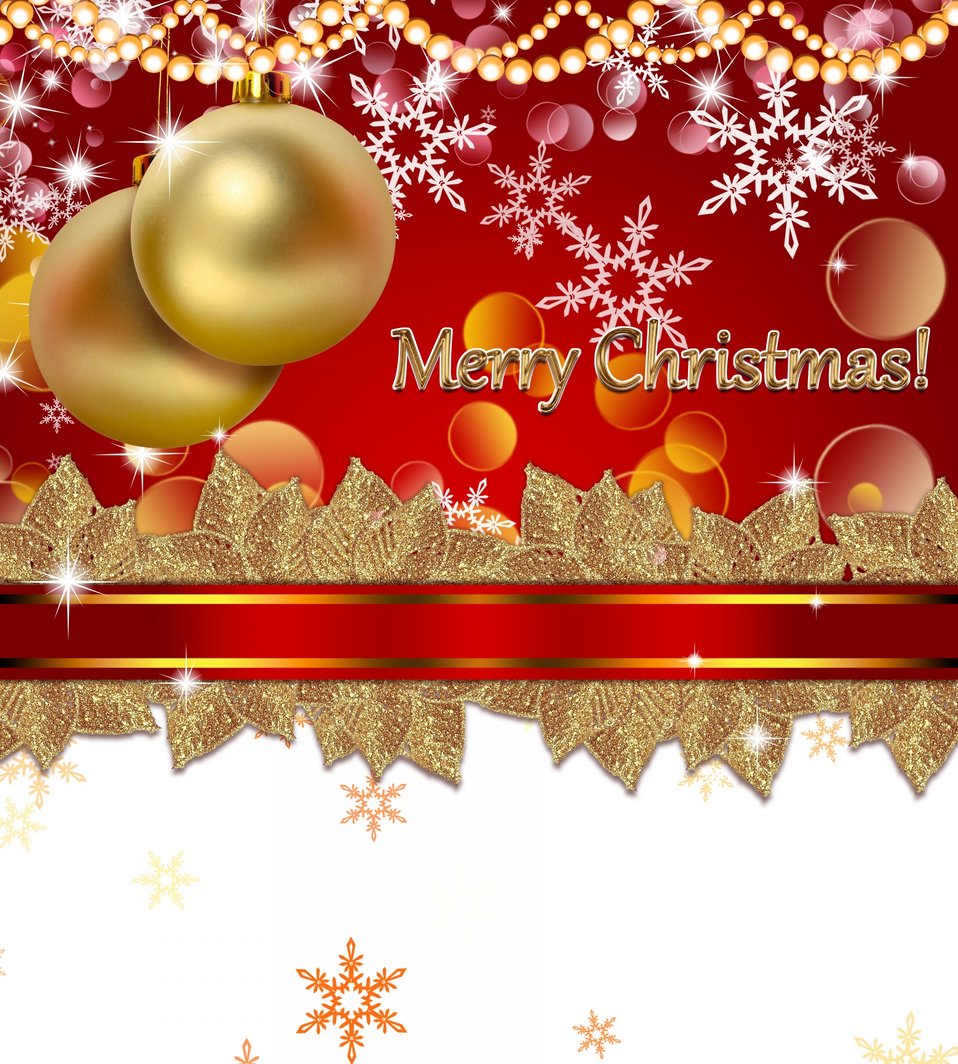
Merry christmas!

Beautiful christmas background.